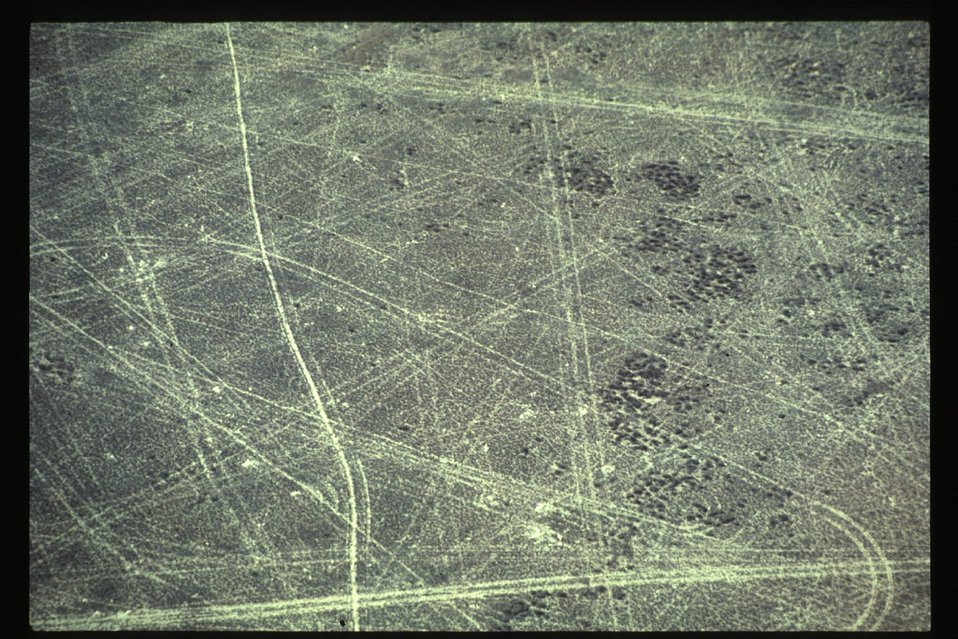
Track from National Guard Tanks Birds of Prey National Conservation Area BOP NCA Owyhee Field Office LSRD Lower Snake River District